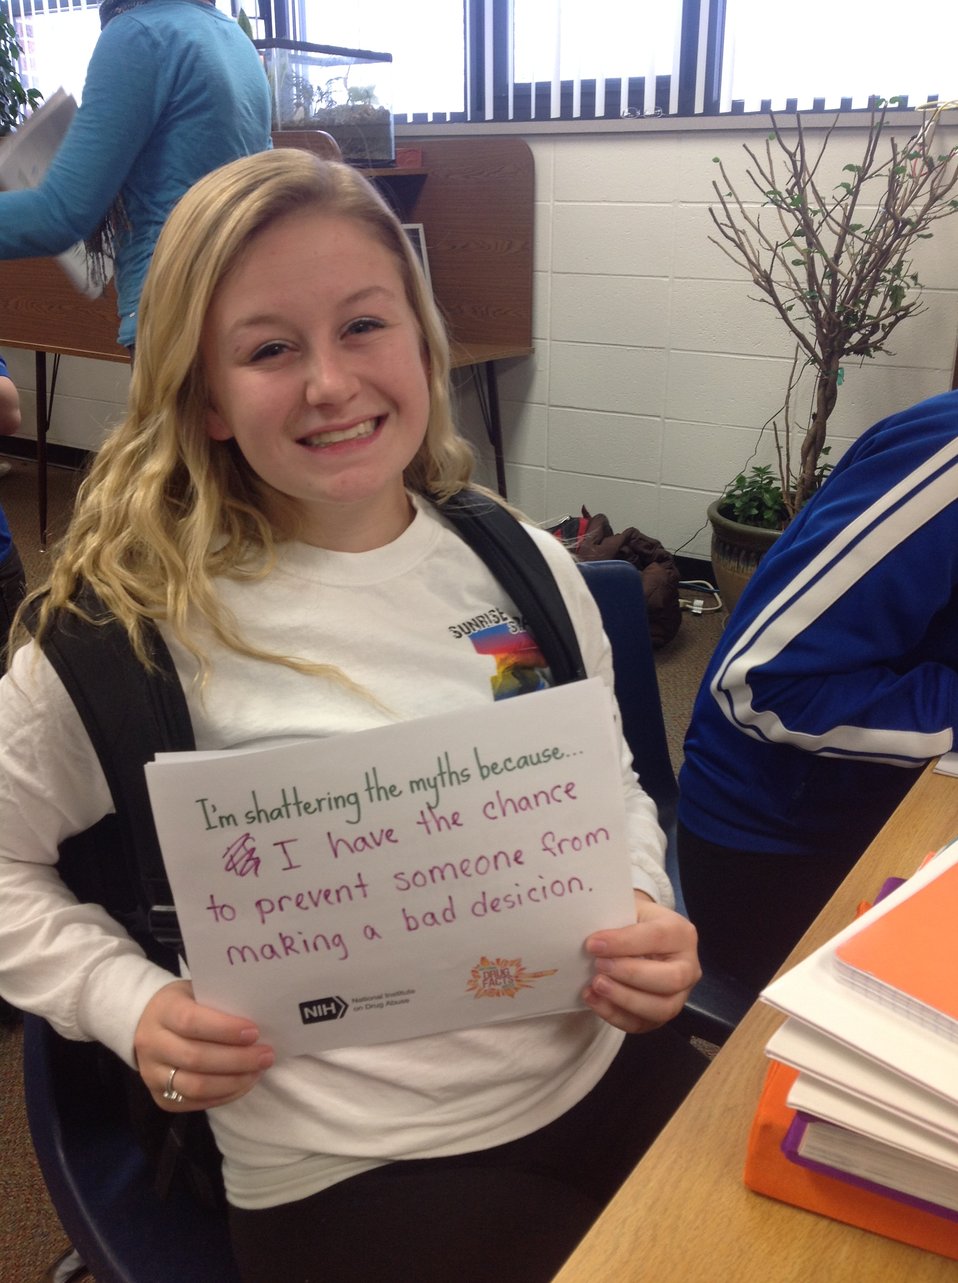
I'm Shattering the Myths Because...

Teenagers from the Van Buren County SAFE Coalition's, Youth Leadership Council (YLC) in Keosauqua, Iowa participate in various events during National Drug Facts Week, 2014.